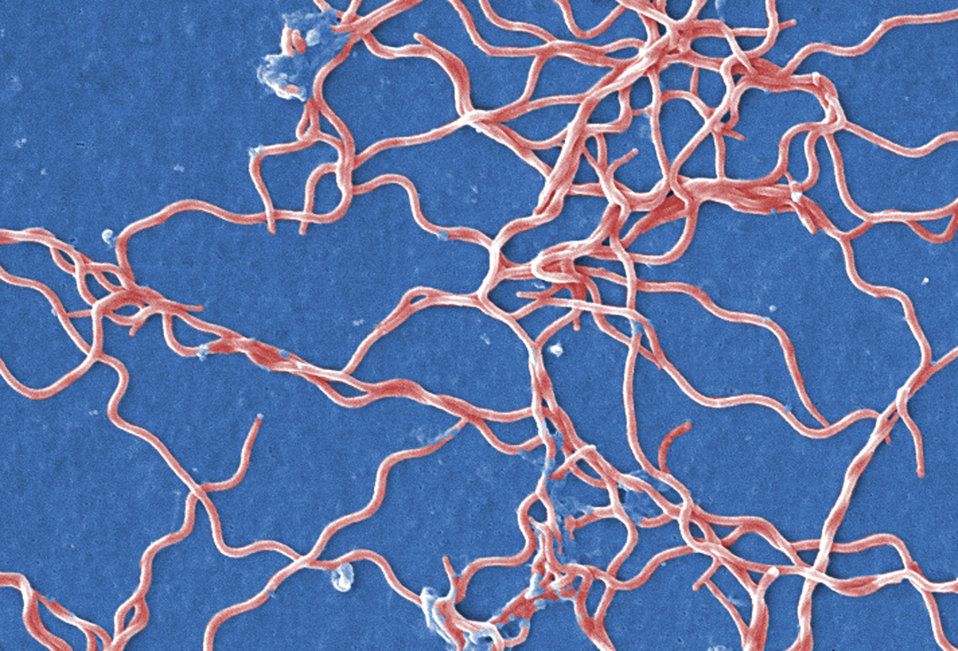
This digitally-colorized scanning electron micrograph depicts a grouping of numerous Gram-negative, anaerobic, Borrelia burgdorferi bacteria, which had been derived from a pure culture.